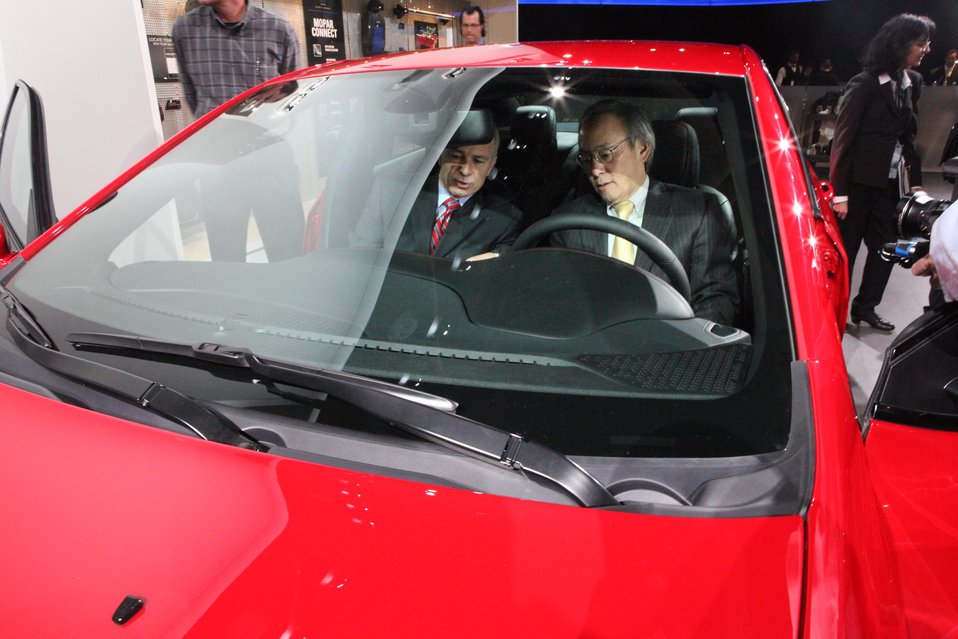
Energy Secretary Steven Chu inside the new 2013 Dodge Dart